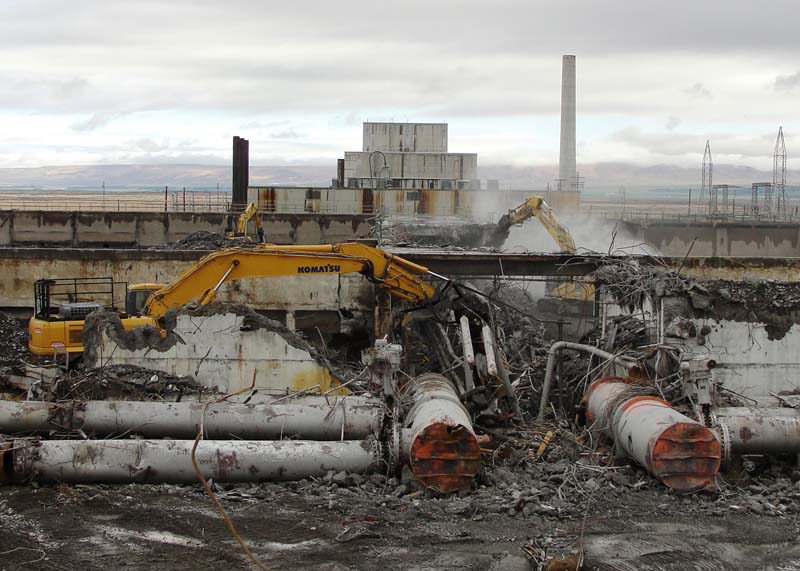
Hanford Recovery Act Workers Tear Down Facilities, Expand Groundwater Treatment in 2010